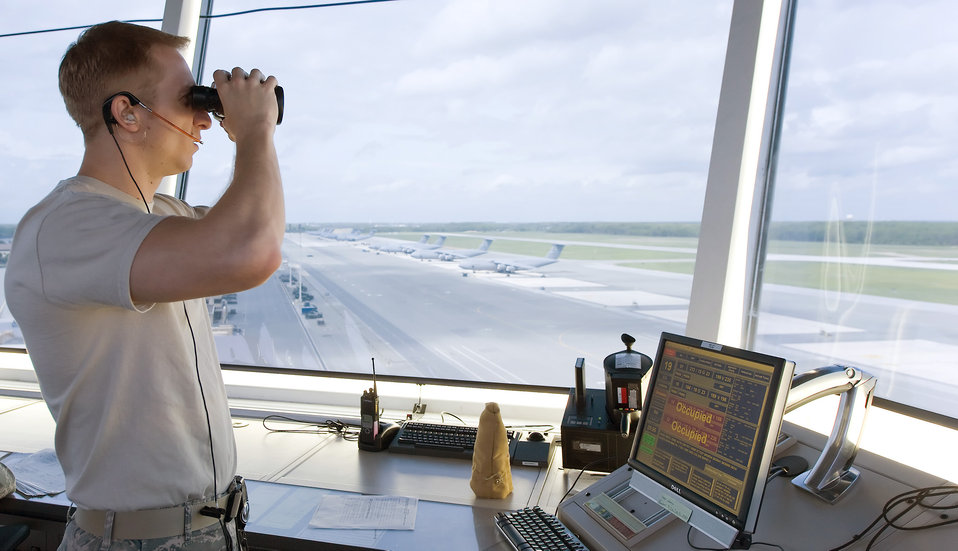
Managing the runway

An air traffic controller observes the flightline at Dover Air Force Base, Del., April 27, 2011, from the control tower.